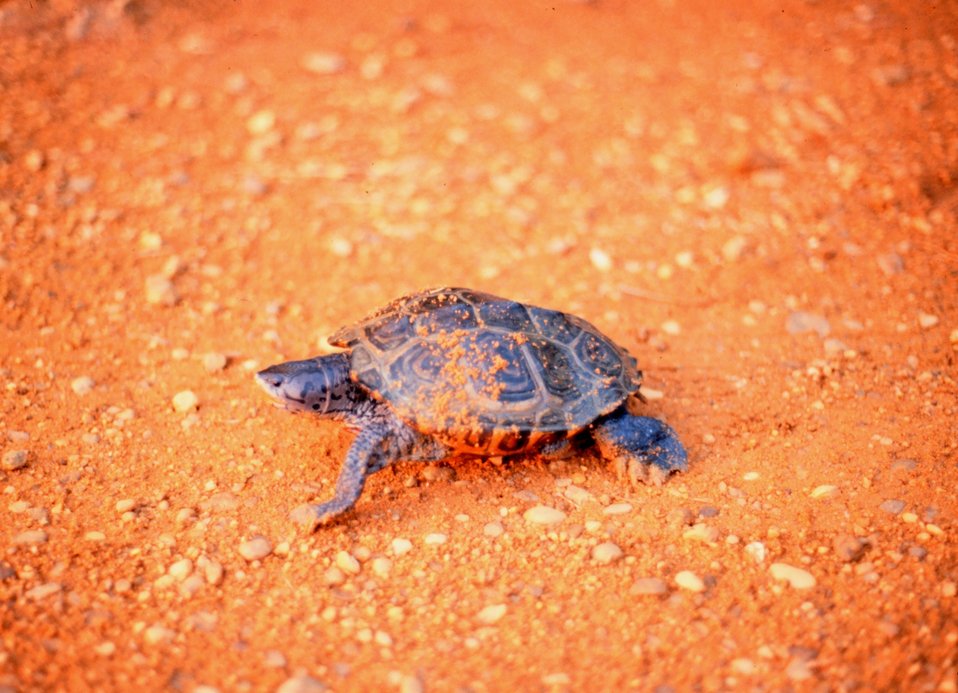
A female Diamondback terrapin, Malaclemys terrapin, puts the final touches on her freshly laid nest of eggs.